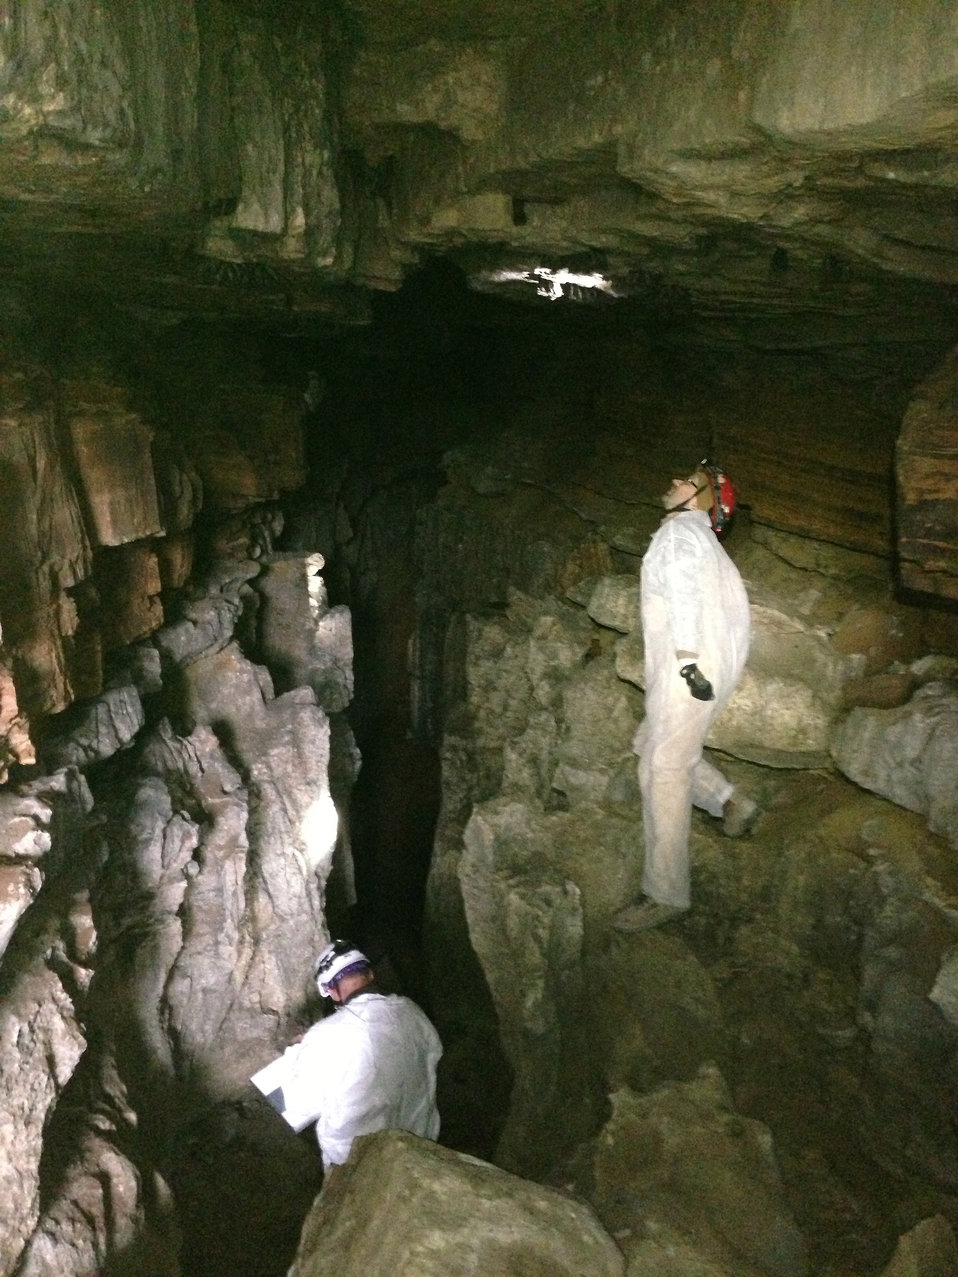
Biologists inspect bats for signs of WNS

Rod McClanahan (left, US Forest Service, Shawnee National Forest, Wildlife Biologist) and Joe Kath (right, Illinois Department of Natural Resources Endangered Species Manager/Bat Specialist) examine bats at a Hardin County, Illinois hibernaculum. 20 February 2013.